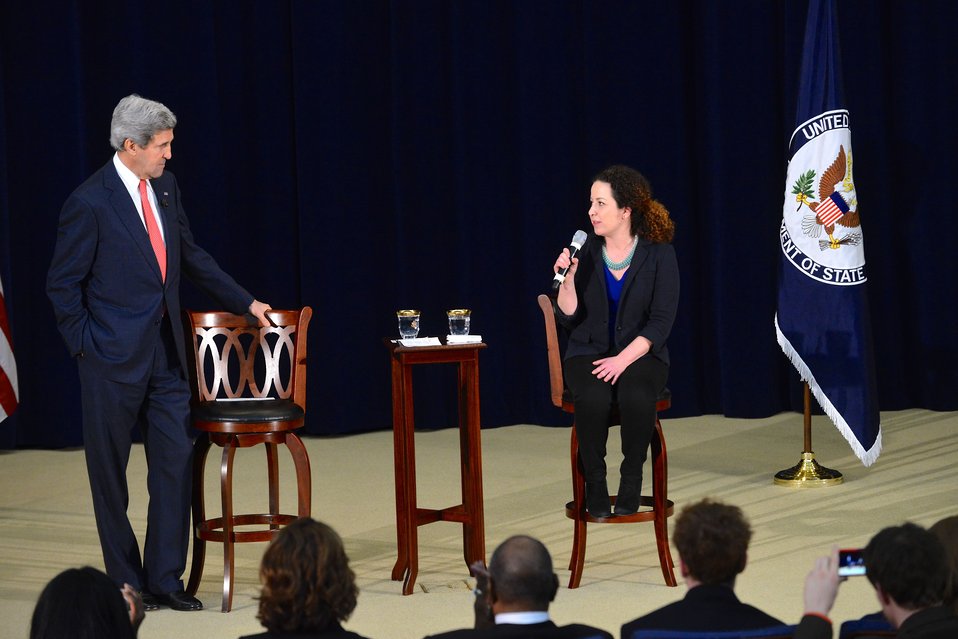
Secretary Kerry Hosts a Town Hall on ‘Making Foreign Policy Less Foreign’

U.S. Secretary of State John Kerry hosts a Town Hall, moderated by BuzzFeed’s Miriam Elder, on ‘Making Foreign Policy Less Foreign’ with university students from around the country attending Washington-area programs, Congressional interns, and U.S. Department of State interns at the Department in Washington, D.C., on March 18, 2014.